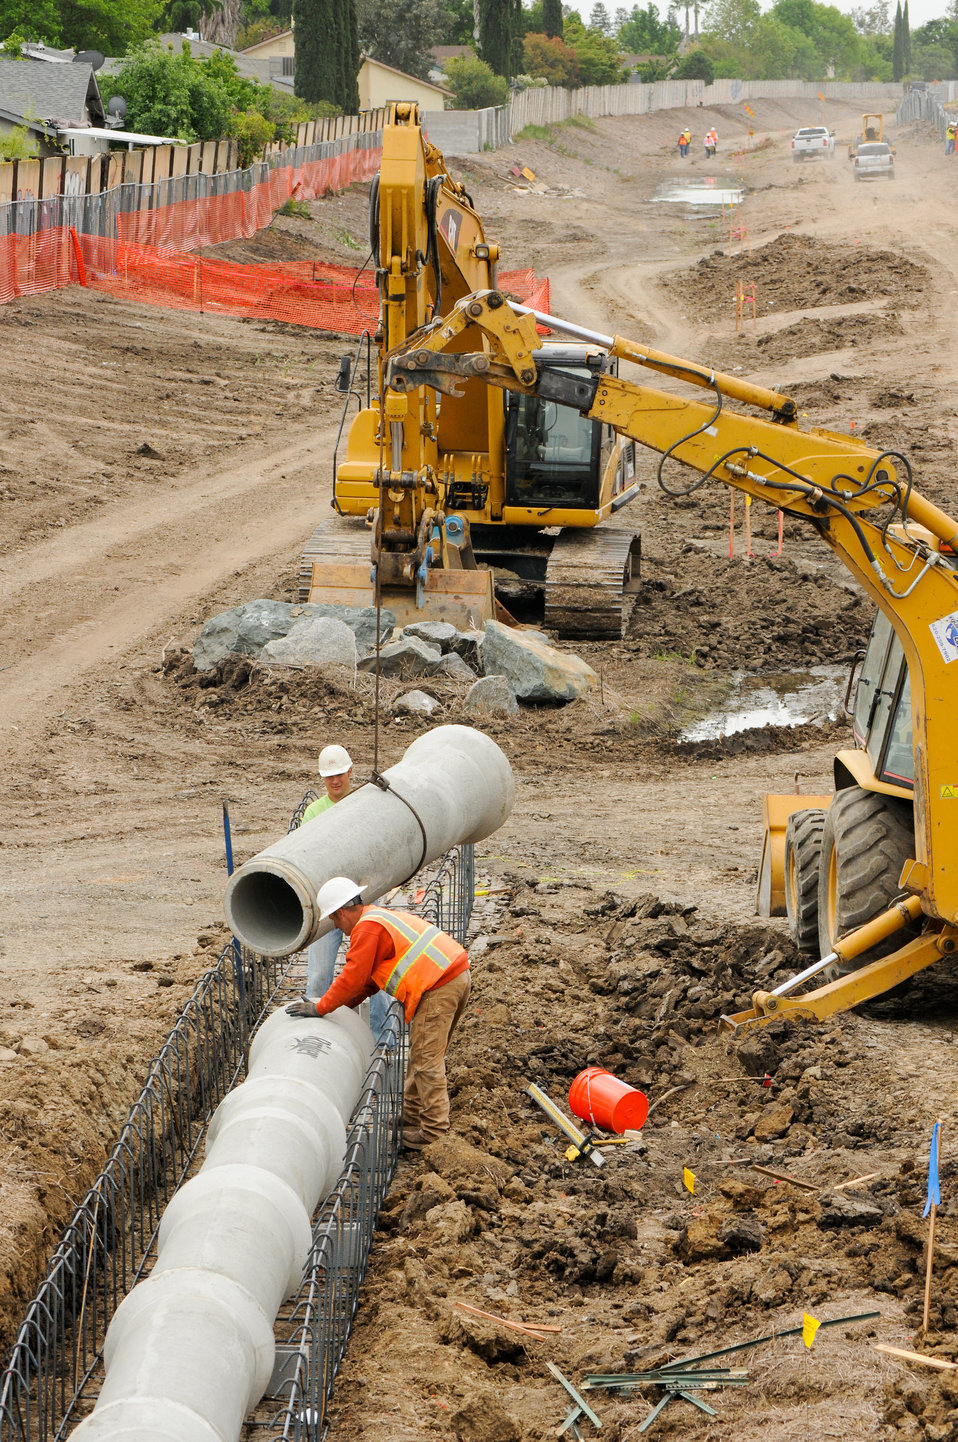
A new drainage line in south Sacramento

Contractors for the U.S. Army Corps of Engineers Sacramento District extend a drainage line May 3, 2012, in preparation for a new concrete flood wall along Morrison Creek in south Sacramento.